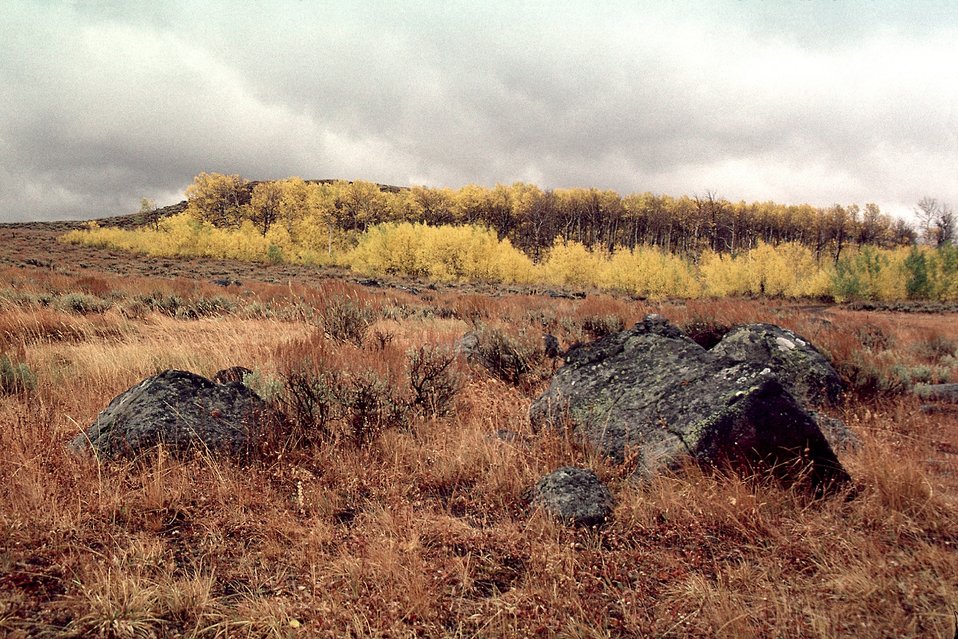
Aspens at Fish Lake, Steen's Mountain.